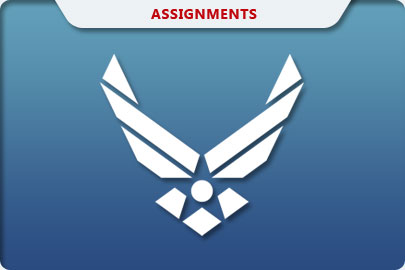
Assignments